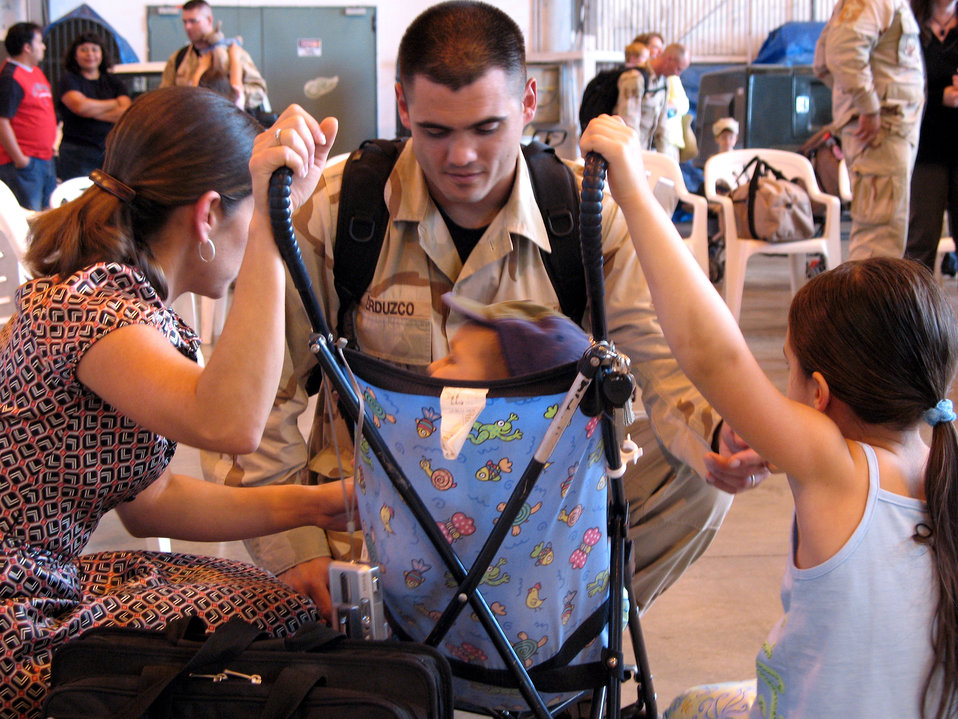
Aviano Airmen return home from fighting war on terrorism

Master Sgt. Richard Verduzco reunites with his family after not seeing them for nine months May 18 at Aviano Air Base, Italy. Sergeant Verduzco is assigned to the 31st Civil Engineer Fire Protection Flight.